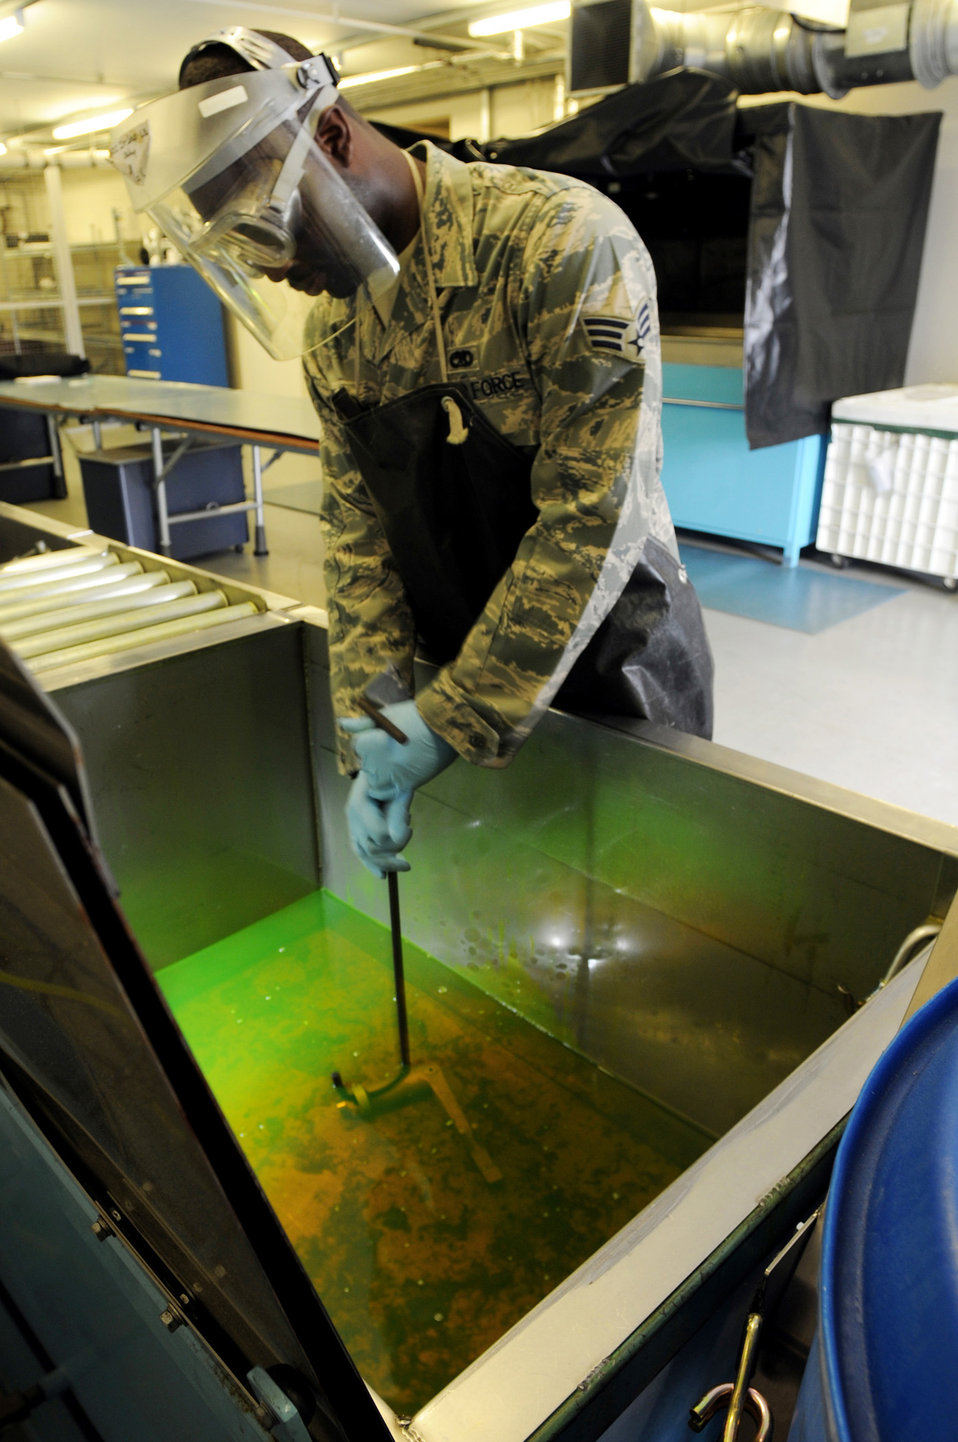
Airmen destroy nothing to sustain mission

Senior Airman Joshua Robinson dips a component into a chemical penetrent, which lights up under black light July 17 at Royal Air Force Lakenheath, England. After the component is dipped into the chemical, the surface is then cleaned, leaving only the fluorescence in the cracks of the component. This allows the cracks to be easily found when the fluorescence lights up under black light. Airman Robinson is a 48th Equipment Maintenance Squadron nondestruction inspection journeyman.